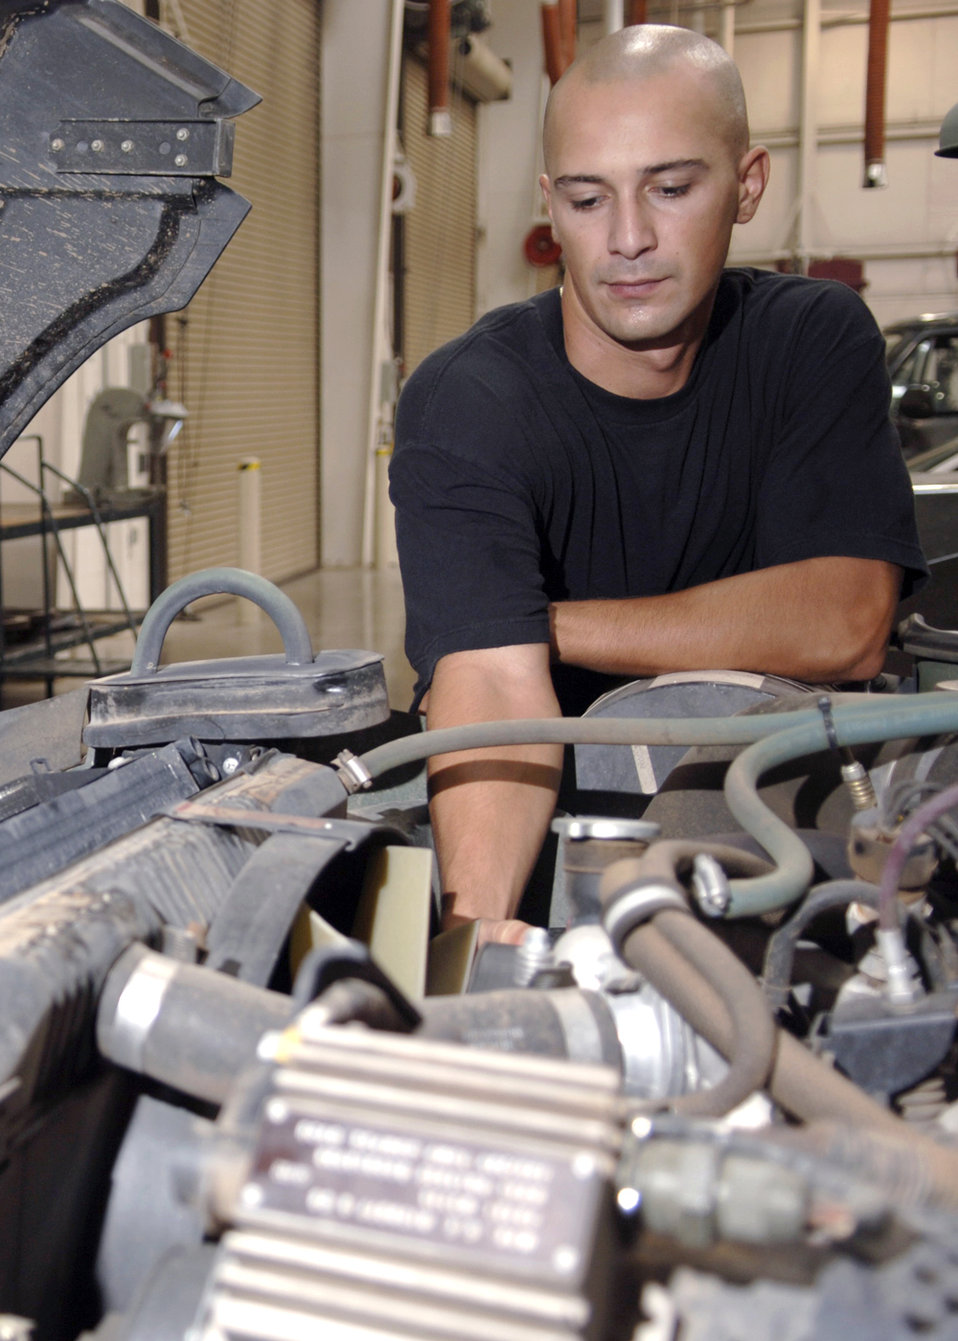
Charging system inspection

Senior Airman Claudiu Ionescu inspects the charging system on a Humvee at Davis-Monthan Air Force Base, Ariz., on July 10. Airman Ionescu was recently deployed in support of Operation Iraqi Freedom, where he participated in 251 convoys traveling more than 2.6 million miles. He is a vehicle and equipment maintainer with the 355th Logistics Readiness Squadron.